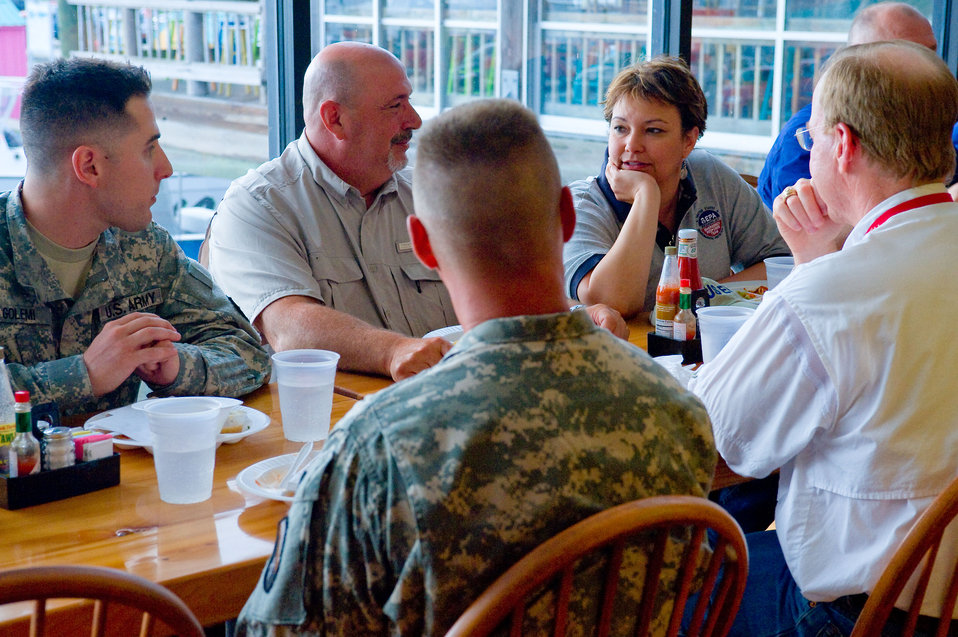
June 2, Discussing the spill response with deployed troops

EPA Administrator Lisa Jackson, National Incident Commander Admiral Thad Allen have dinner with troops deployed to the Gulf Coast.